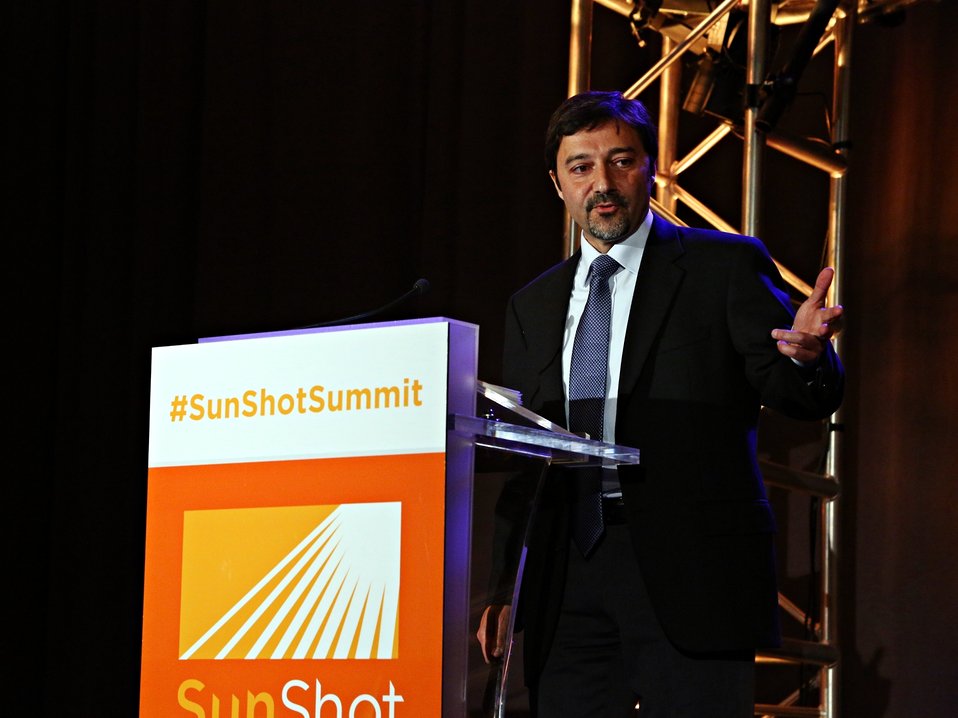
Day 2 Keynote Session 7

Raffi Garabedian, First Solar Chief Technology Officer, provides a keynote address.